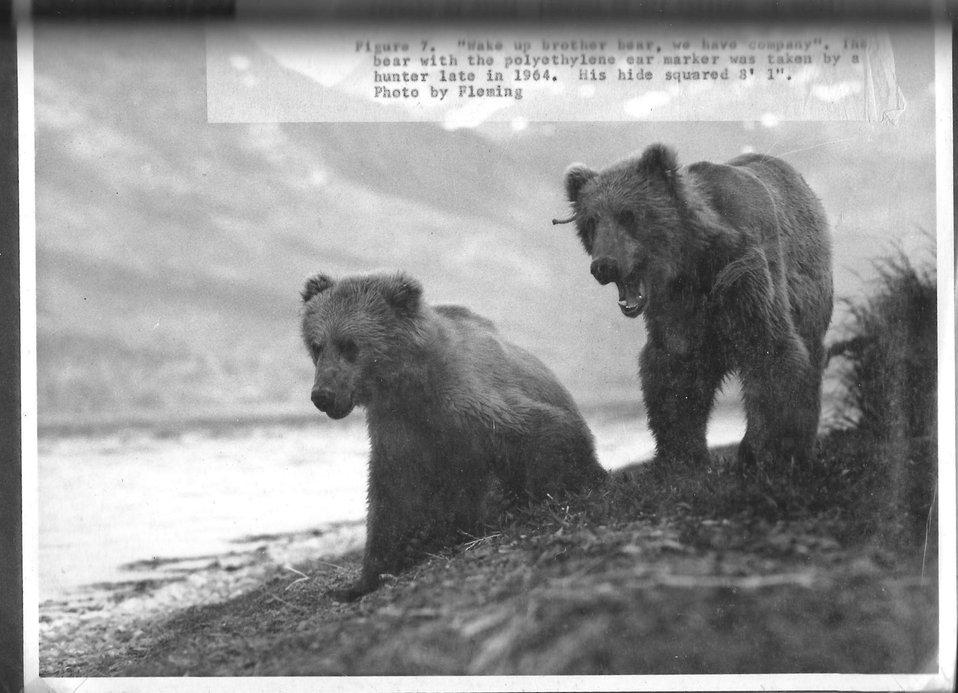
(1964) Wake Up, Brother Bear

Credit: USFWS

Source and Contact: Kodiak National Wildlife Refuge